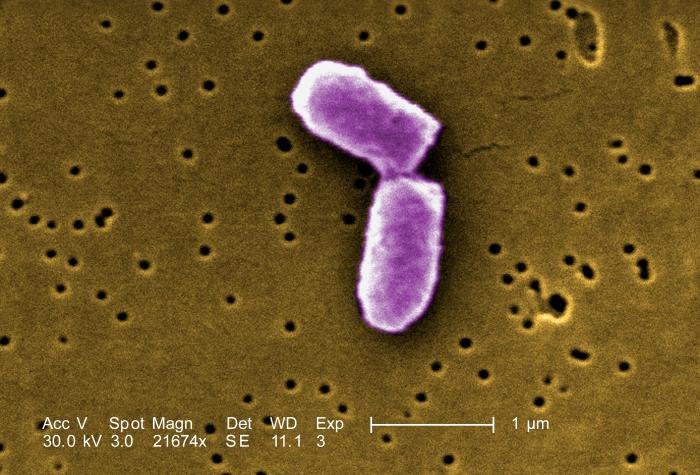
This colorized version of PHIL 7137 depicts a highly magnified scanning electron micrographic (SEM) view of a dividing Escherichia coli bacteria, clearly displaying the point at which the bacteria's cell wall was dividing; Magnification 21674x.